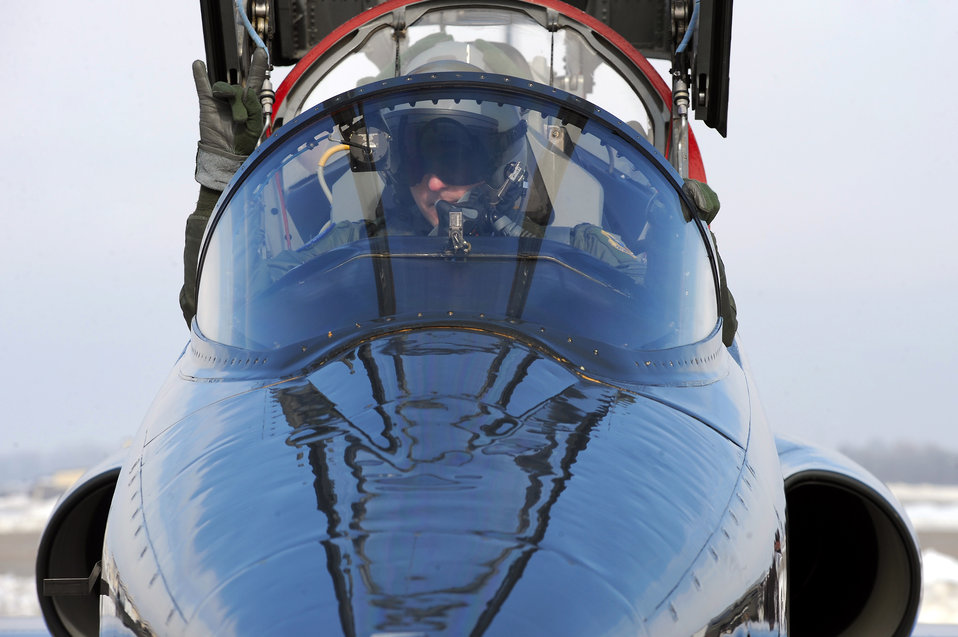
T-38 Talons ready for flight

T-38 Talon pilots prepare for takeoff Jan 26, 2011, at Whiteman Air Force Base, Mo.